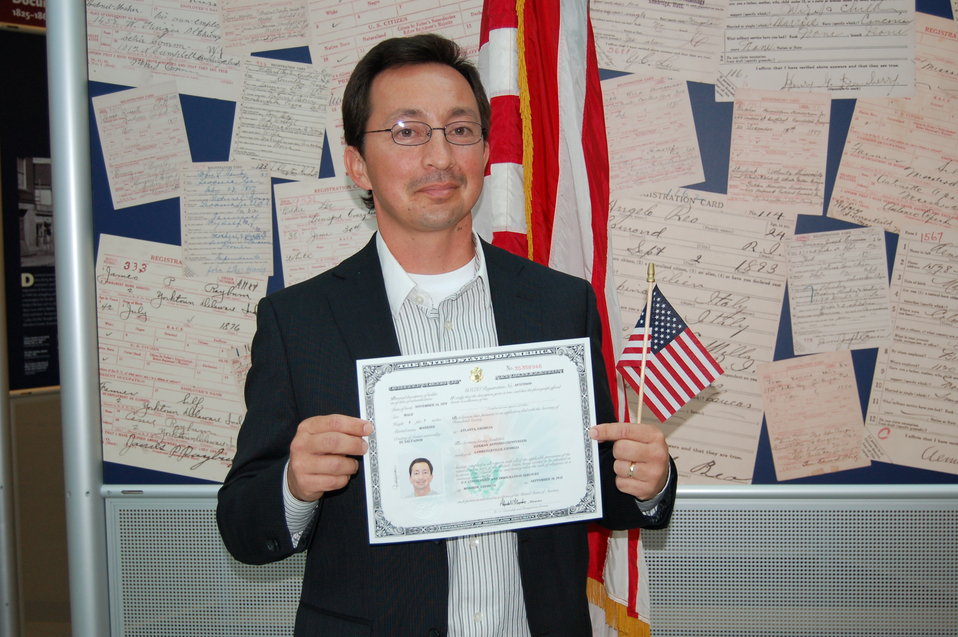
New Citizens